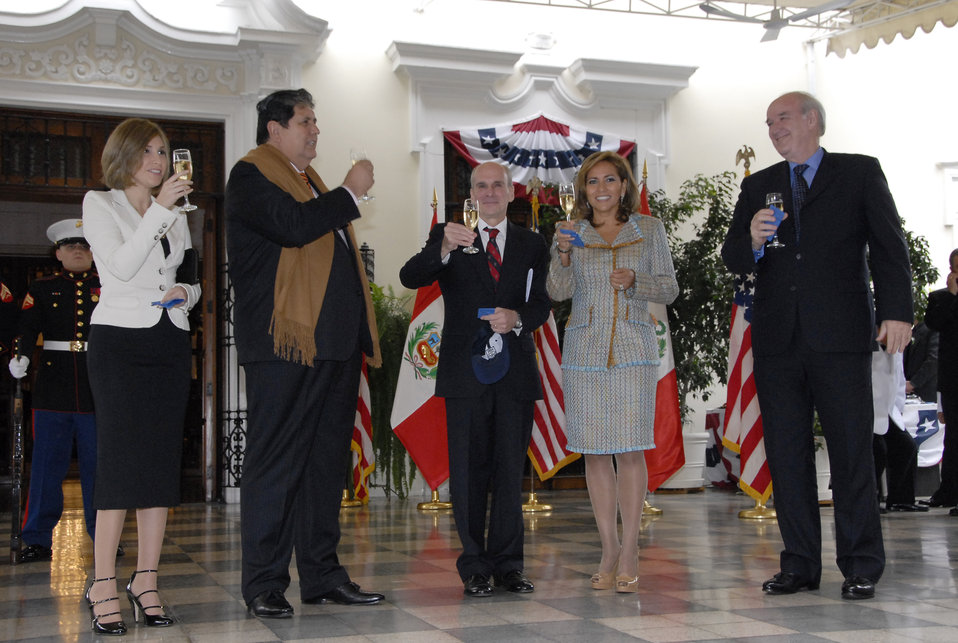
Josefina Garcia Nores, Peruvian President Alan Garcia Perez, Ambassador McKinley and Mrs. McKinley Toast to the Fourth of July

(Left to right) Josefina Garcia Nores, daughter of Peruvian President Alan Garcia Perez, Peruvian President Alan Garcia Perez, U.S. Ambassador to Peru Michael McKinley, and his wife, Fatima McKinley, toast to the Fourth of July during the U.S. Independence Day celebration at the U.S. Embassy Lima in Peru on July 4, 2010.